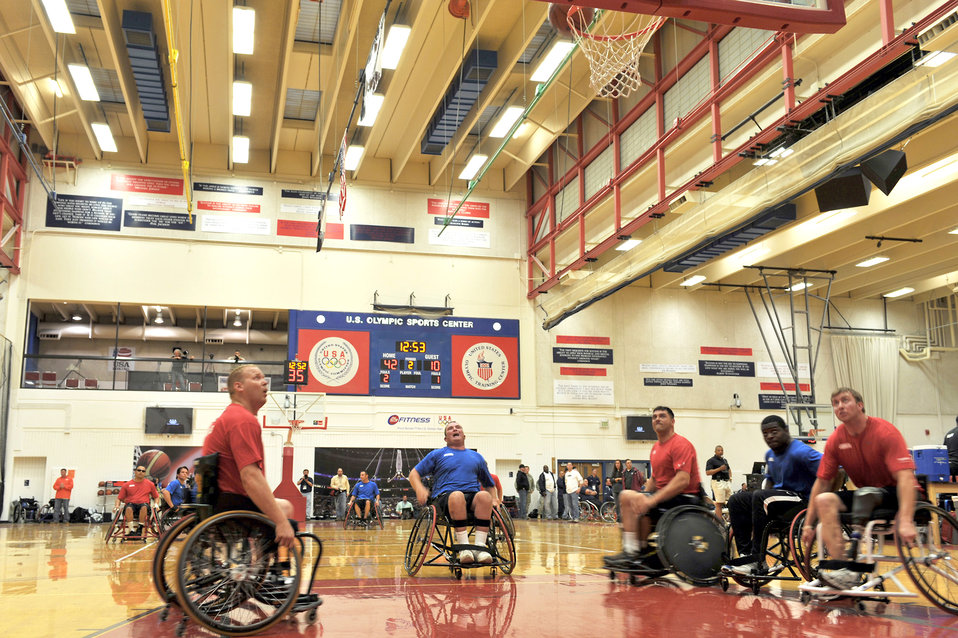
Warrior Games basketball competition

Staff Sgt. Richard Pollock II shoots a free throw during a wheelchair basketball game against the Marines May 11, 2010, at the Olympic Training Center in Colorado Springs, Colo. The Air Force team lost 68-13.